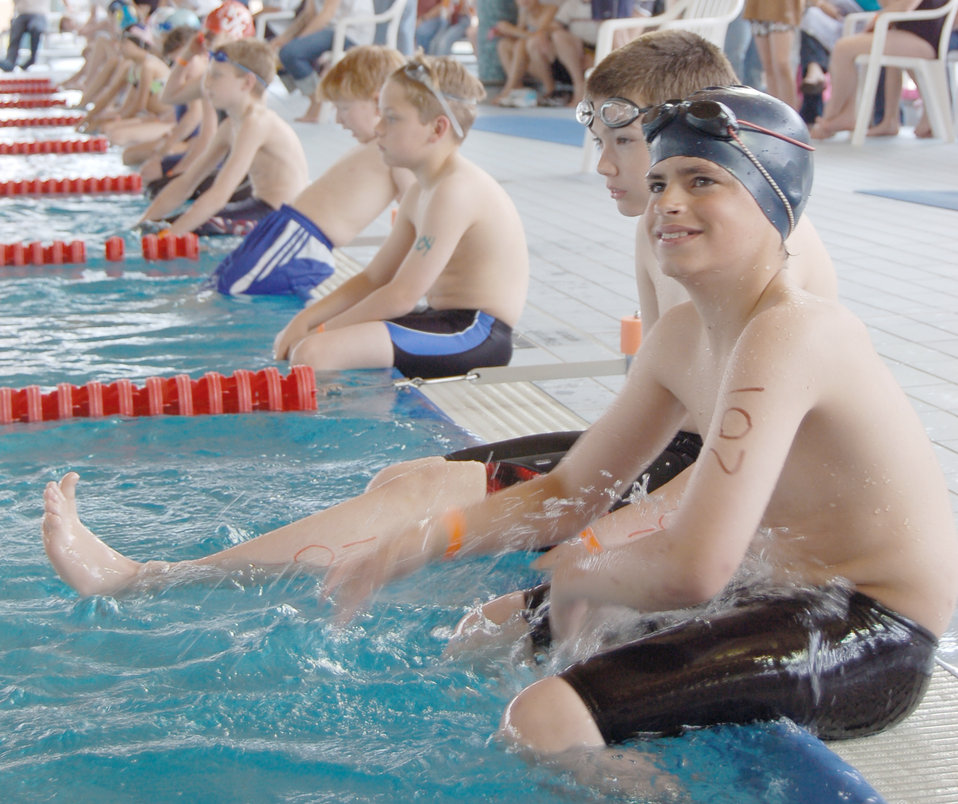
Triathlon kicks off fitness month, brings families together

Children wait to participate in the first heat of the swimming portion at the second annual FitFactor Triathlon May 2, 2010, at Ramstein Air Base, Germany. Participants swam either 200 or 500 meters, depending on their age category.